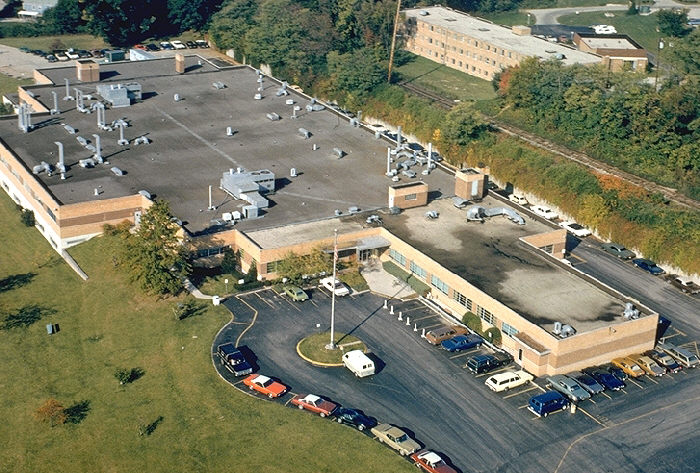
1979 aerial view of CDC Field Station, Ridge Avenue, Cincinnati, Ohio.